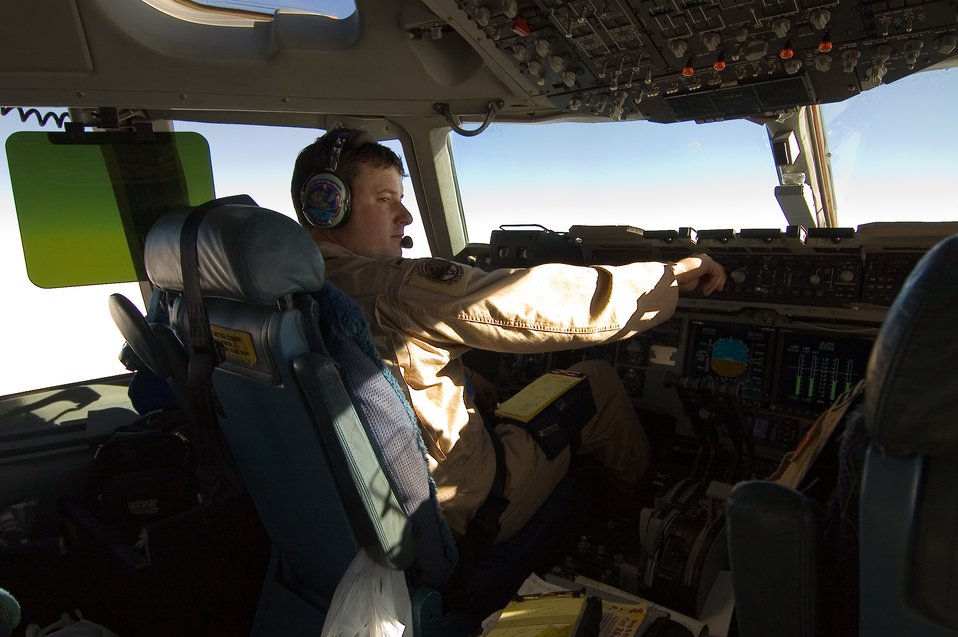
Saving Soldier

1st Lt. Wes Carter from the 172nd Airlift Wing, Mississippi Air National Guard, pilots a C-17 Globemaster III to Ramstein Air Base, Germany, on March 2.